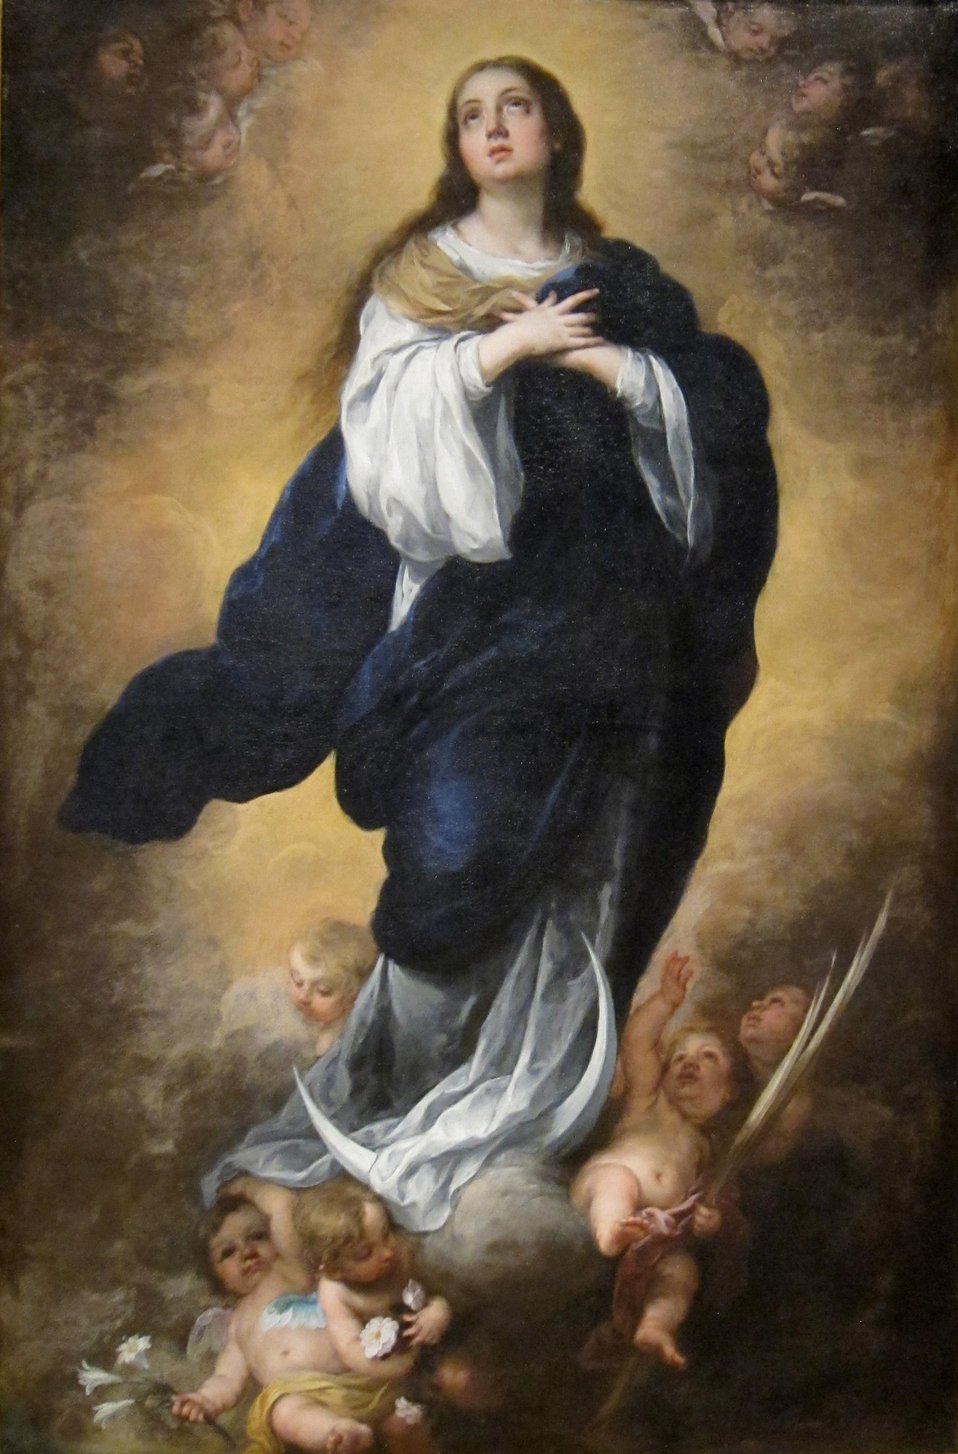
The Immaculate Conception, oil on canvas painting by Bartolom√© Esteban Murillo, c. 1670-80, Dayton Art Institute